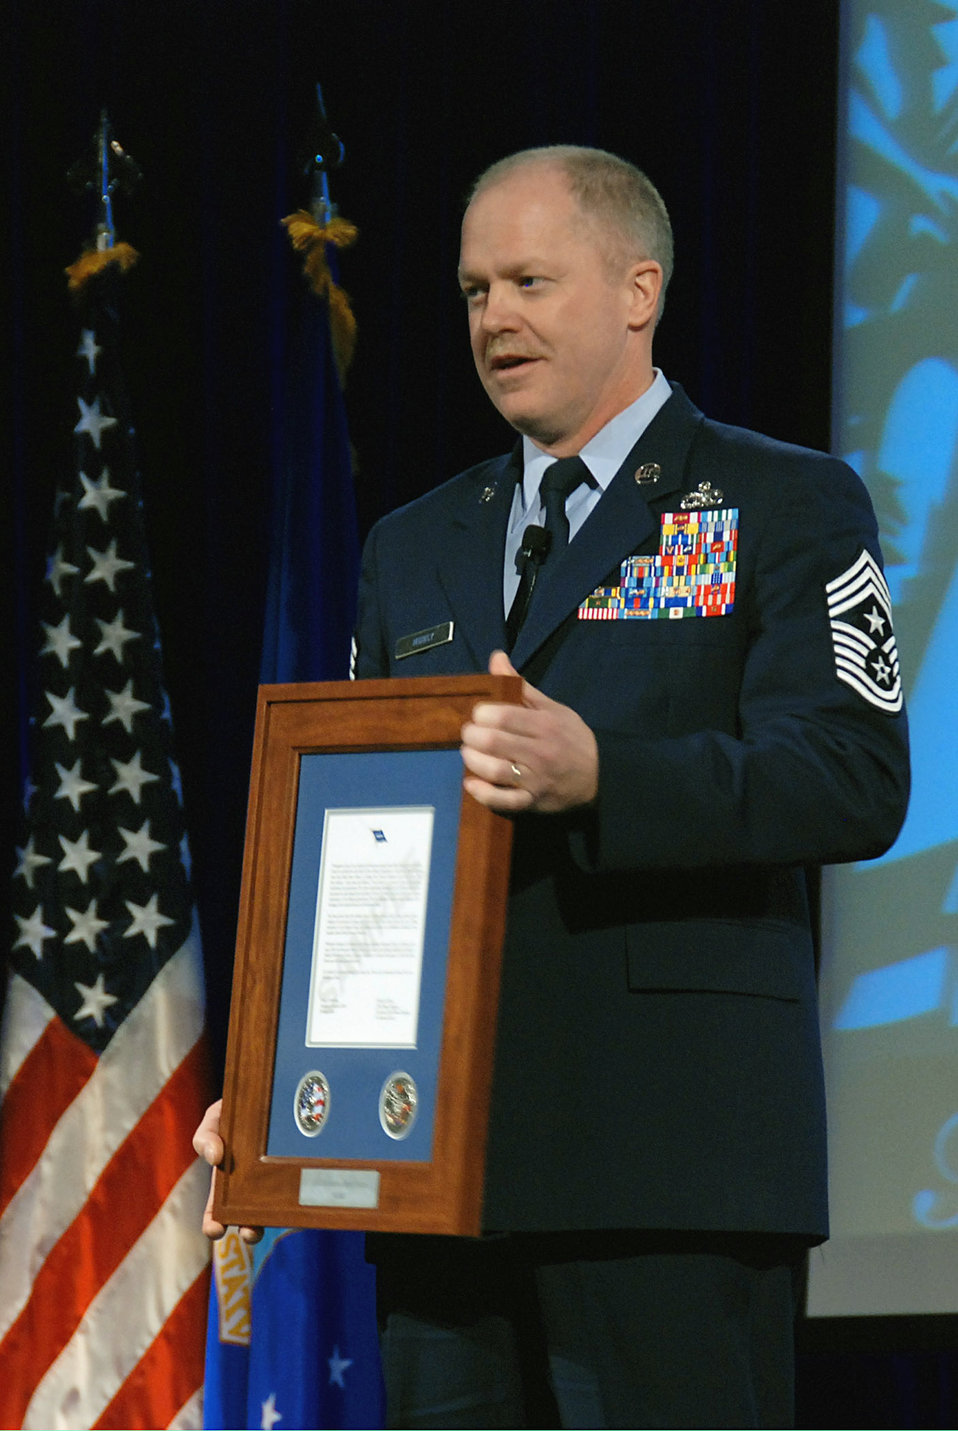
Guard members to be honored through Salute Campaign

Chief Master Sgt. Christopher Muncy holds up a Hometown Heroes Salute Award that will be given in 2009 to eligible National Guard Airmen who deployed on orders for more than 30 consecutive days in a contingency operation. Chief Muncy, the command chief of the Ohio Air National Guard, and Chief Master Sgt. Richard Smith, command chief of the Air Guard, announced the Hometown Heroes Salute program Nov. 20 at the Air Guard Senior Leadership conference outside Washington.